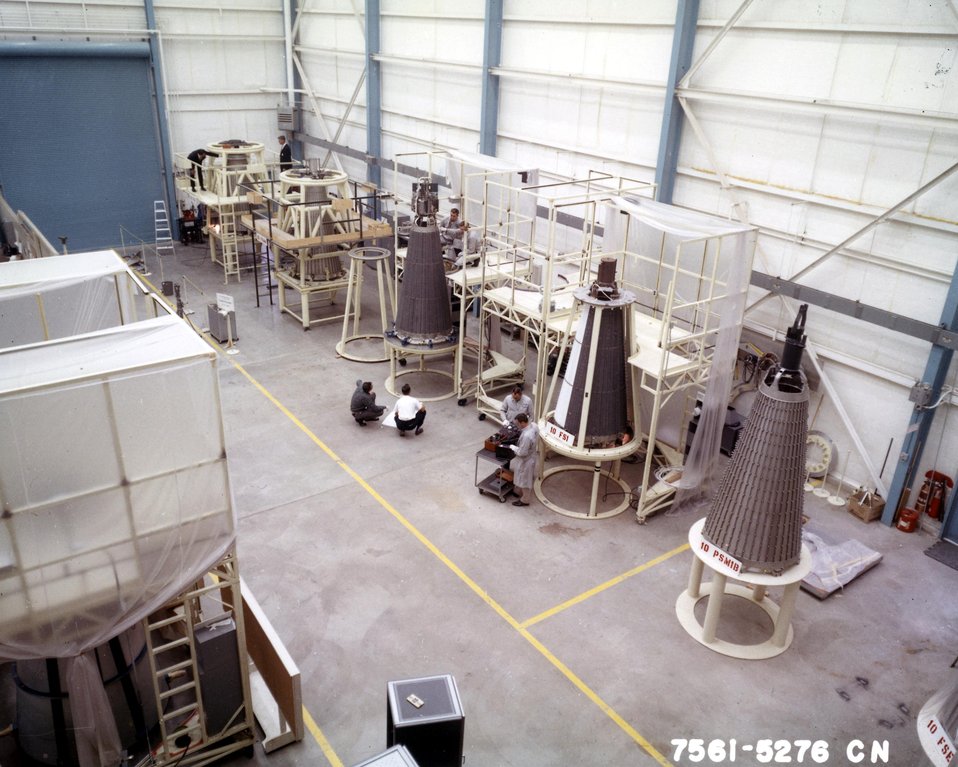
Reactor production line